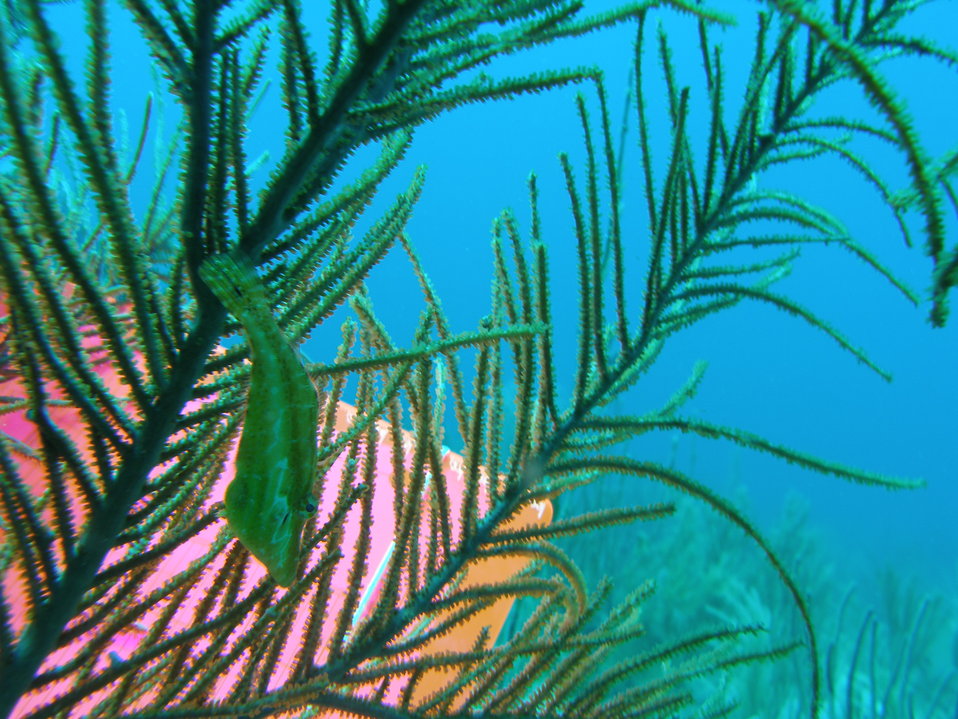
Slender filefish (Monacanthus tuckeri)